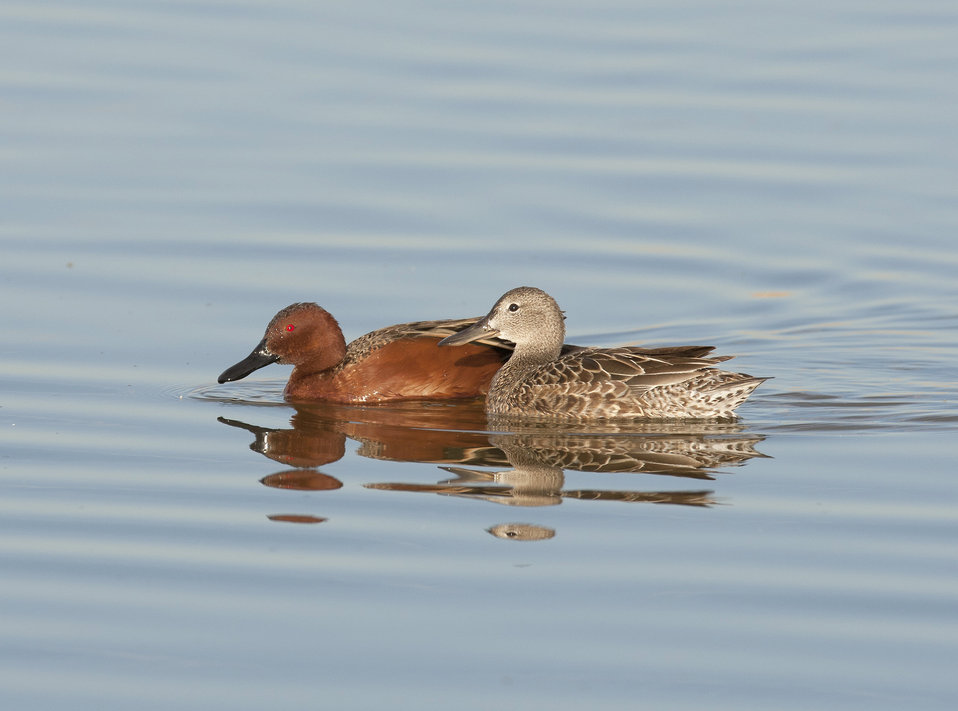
A Pair of Cinnamon Teal

The lands of the refuge were established to protect and provide habitat for migratory birds that cross State lines and international borders and are by law a Federal trust responsibility.

The refuge is of great value to waterfowl and shorebirds, as well as other migrating water-dependent bird species, because of the diversity of wetland and upland habitats that provide for the diverse life cycle needs of these species.